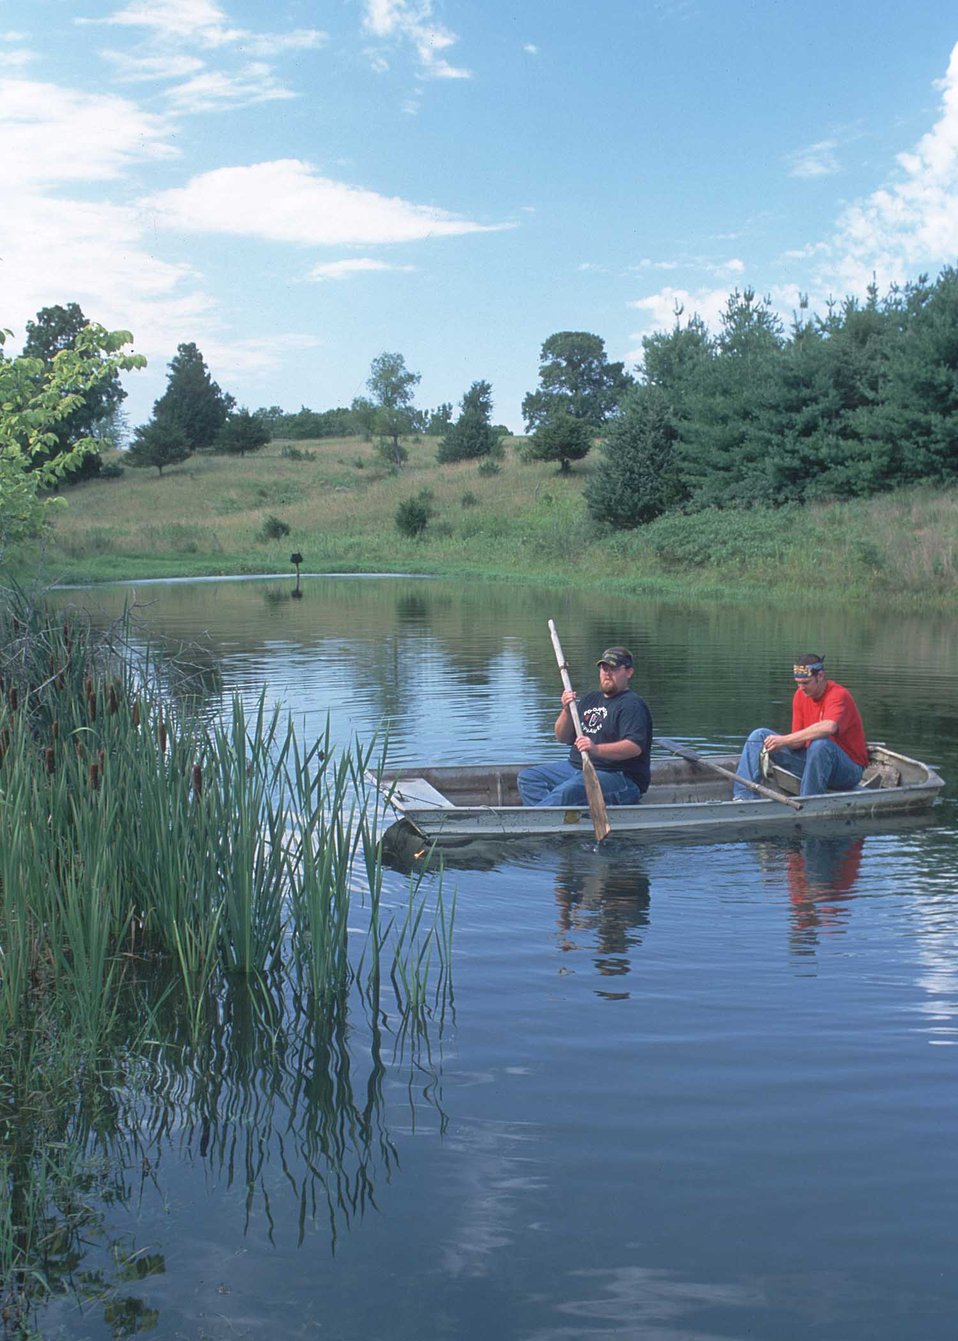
A well-designed farm pond with surrounding wildlife habitat offers excellent recreation in rural Van Buren County, Iowa.